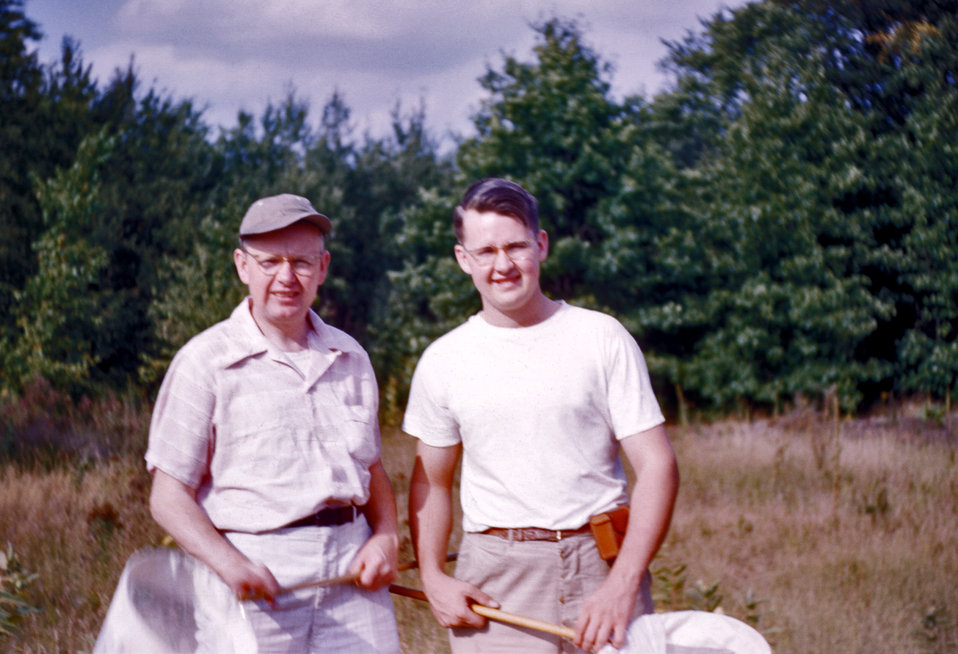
This photograph showed a younger version, of the future U.S. Centers for Disease Control and Prevention (CDC) malaria researcher, Dr. Bill Collins (right), and his father, Mac Collins (left), collecting insect specimens on Michigan's Upper Peninsula.